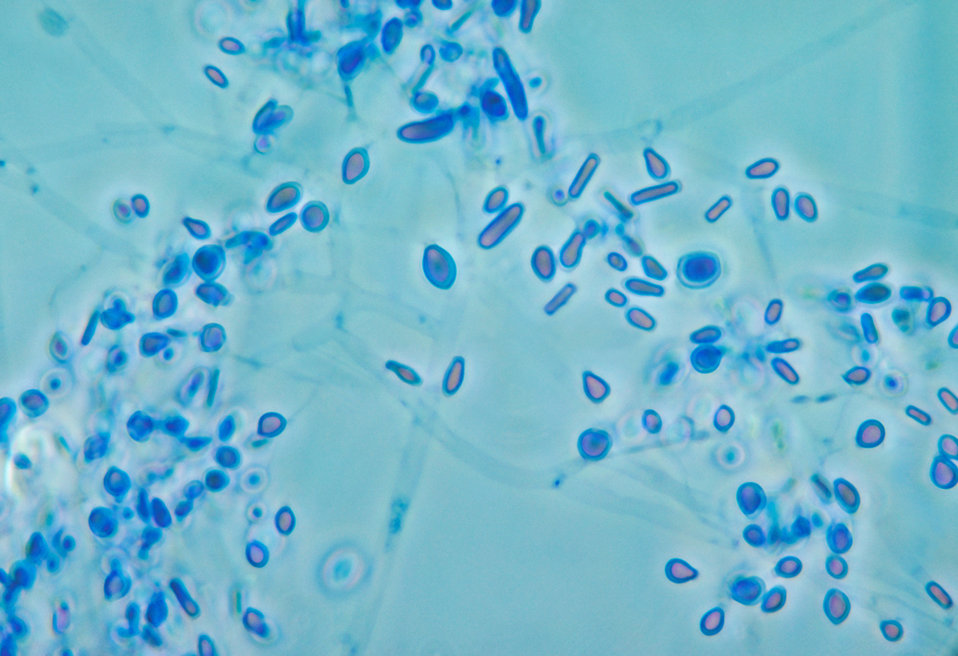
This photomicrograph depicts fungal spores of what may be an Emmonsia sp. or Chrysosporium sp..